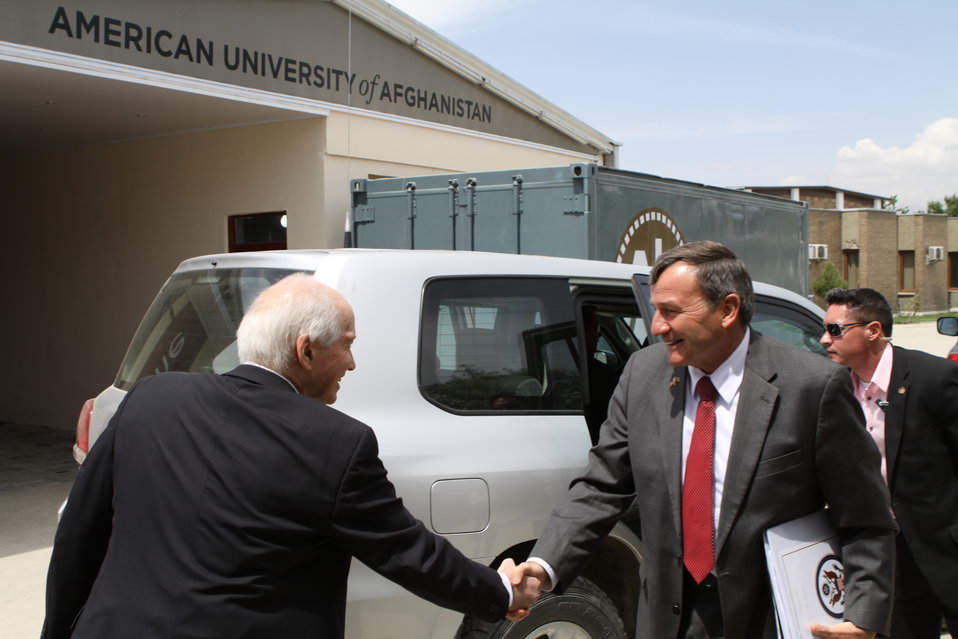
100526 AUAF Graduation 008